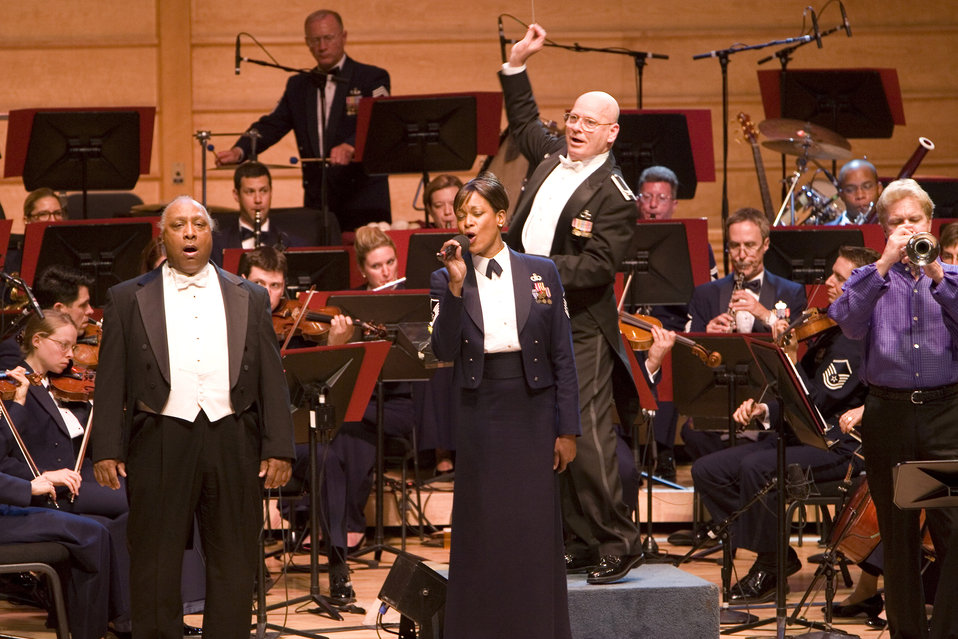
AF anniversary concert airs nationwide Nov. 2

Thomas Young of The Tenors: Cook, Dixon and Young, Master Sgt. Shani Prewitt of the U.S. Air Force Band and Rolf Smedvig of Empire Brass perform in a concert celebrating the Air Force's 60th Anniversary. Conducted by Air Force Band commander and music director Col. Dennis Layendecker, the concert will be broadcast nationally on public television stations Veteran's Day 2007.